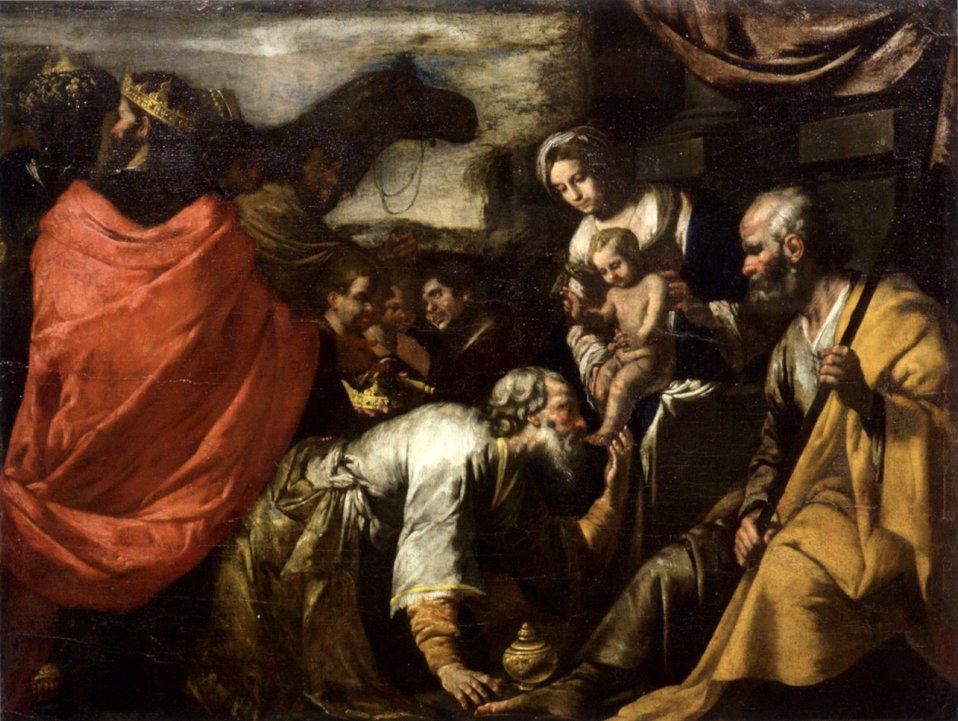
'Adoration of the Magi', painting by Bernardo Cavallino